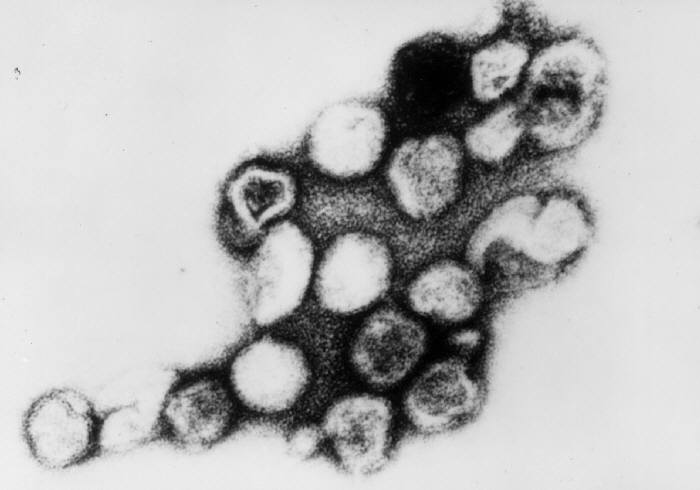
This transmission electron micrograph (TEM) depicts a number of rubella virions.